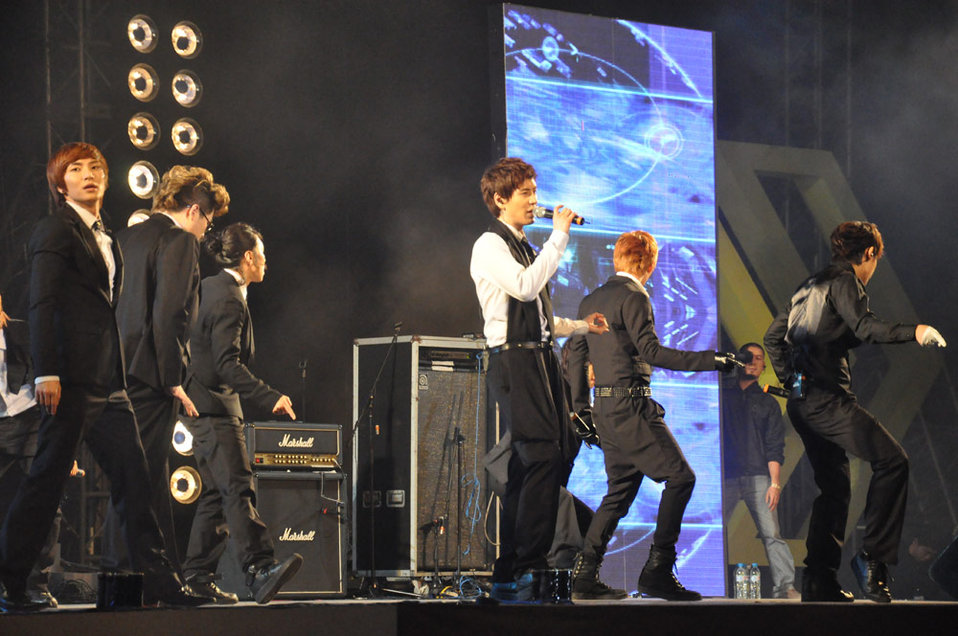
MTV EXIT Hanoi concert March 27, 2010

Super Junior performs in Hanoi.